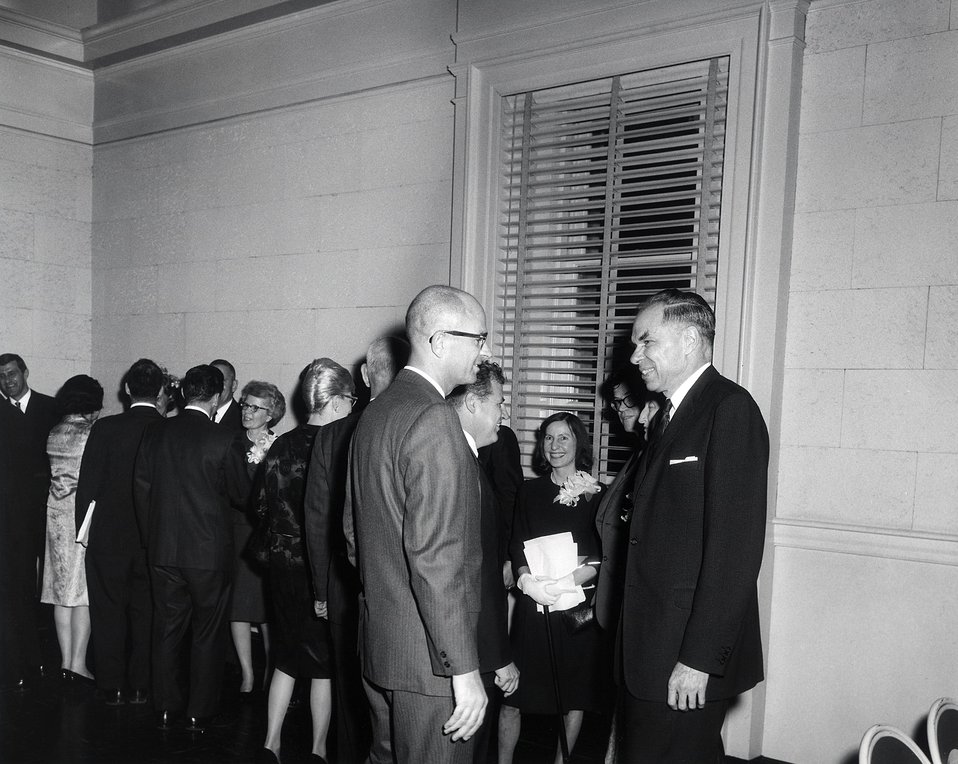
7th E.O. Lawrence Award Ceremony, April 27, 1966, Wash., D.C. Receiving Line. Foreground: Chmn. Seaborg, Mrs. Seaborg, Mr. Sewell, GAC, Comm. and Mrs. Palfrey.